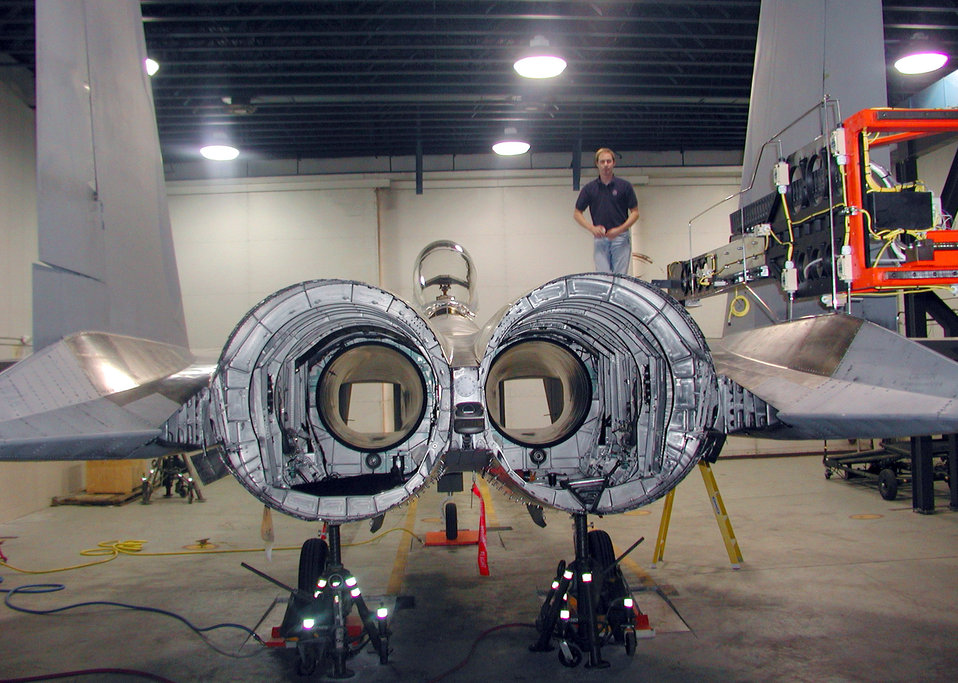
Plane X-ray

ROBINS AIR FORCE BASE, Ga. -- The new multiaxis X-ray detects aging aircraft problems like foreign object damage, corrosion and internal moisture on an F-15 Eagle at Warner Robins Air Logistics Center here. The system is projected to save the Air Force time and money, increase worker safety and reduce environmental hazards.